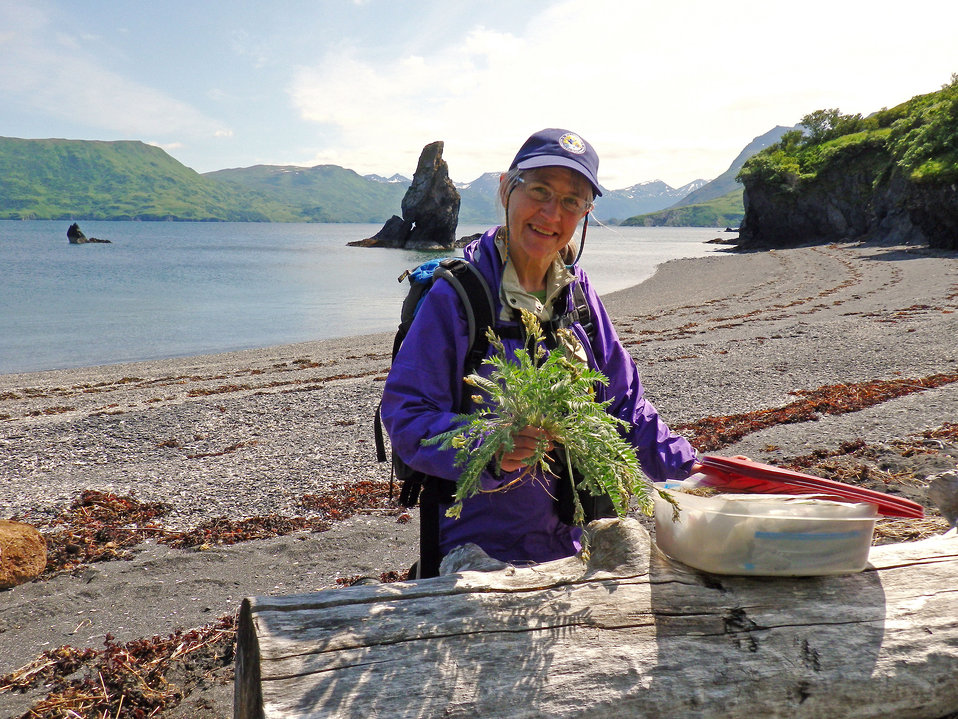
Volunteer Stacy Studebaker collects plant specimens in Uganik Bay

Photo Credit: Mike Sirofchuck/USFWS
Source: Kodiak NWR